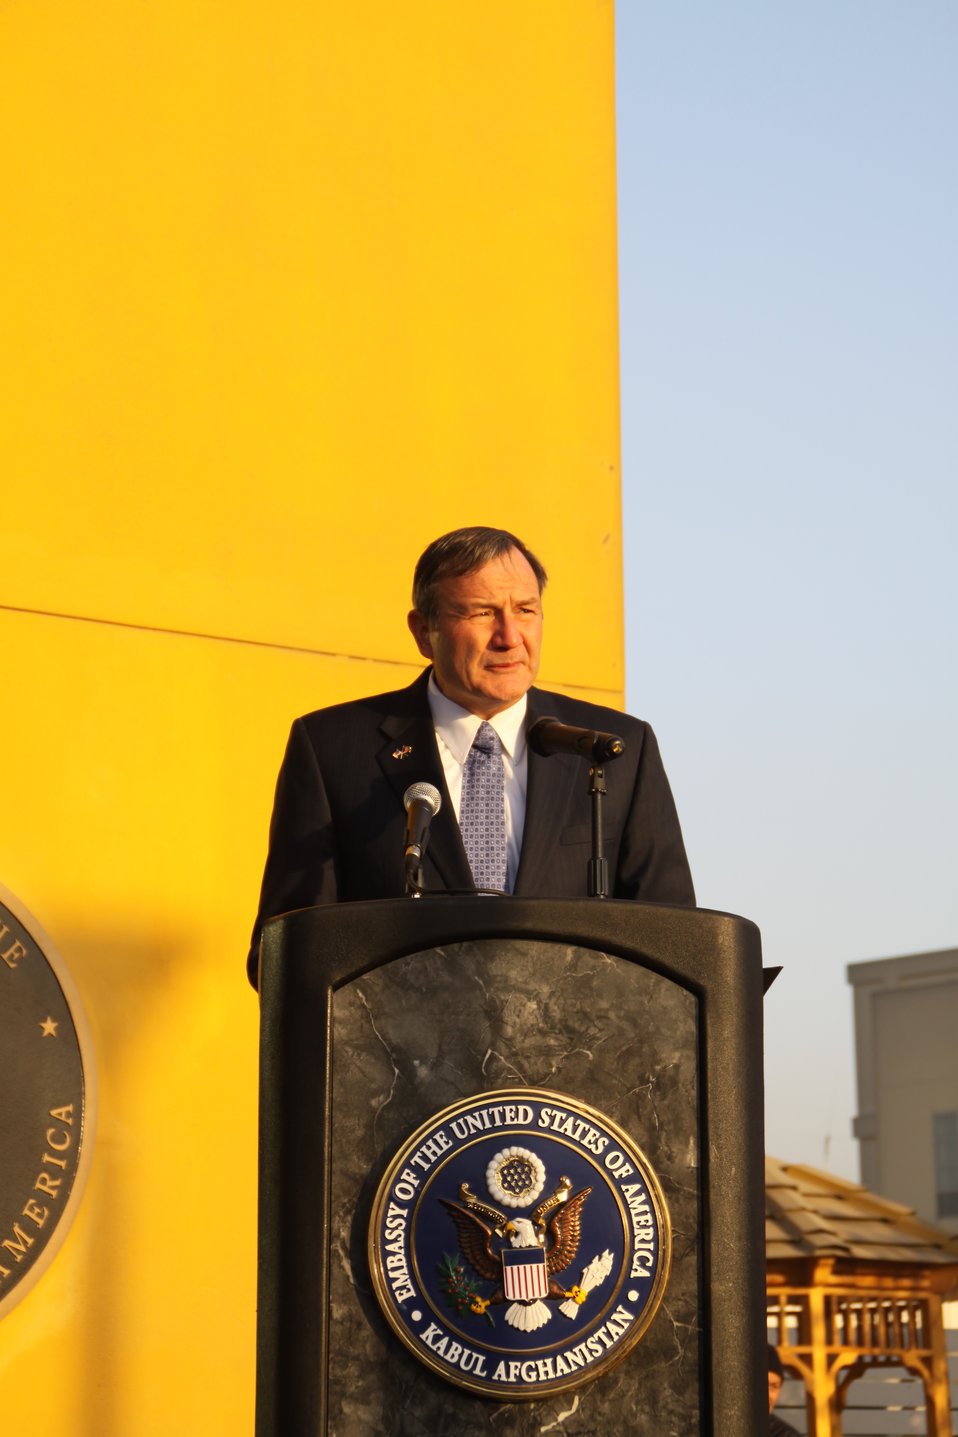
Ambassador Eikenberry